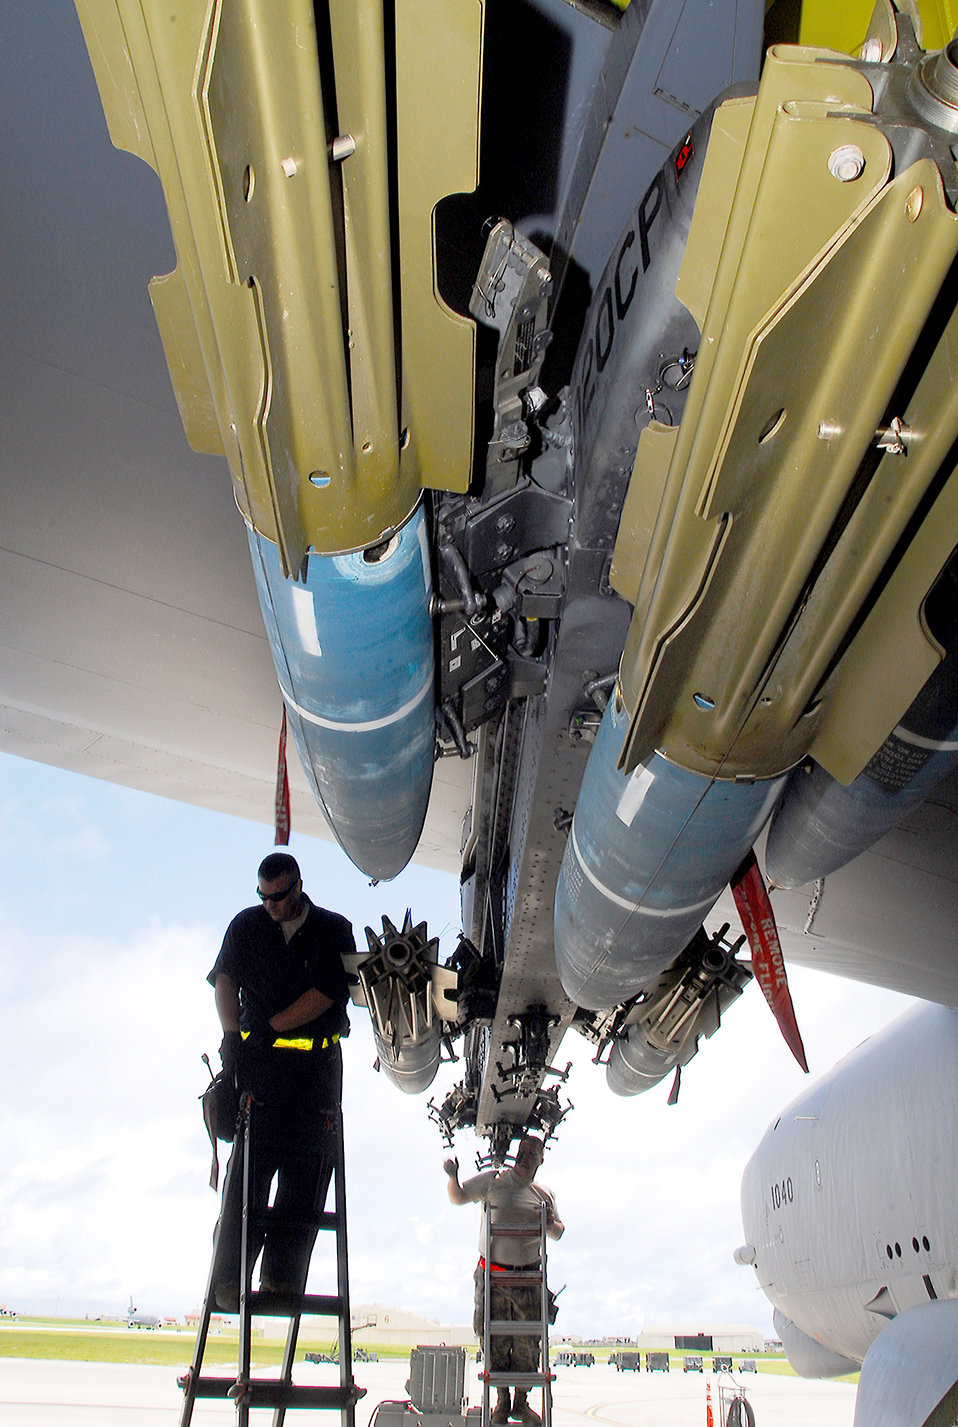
Valiant Shield joint exercise

Staff Sgts. Dustin Hyden and Doyle Atkinson upload Mk 62 Quickstrike naval mines onto a B-52 Stratofortress Sept. 14, 2010, at Andersen Air Force Base, Guam. The mines were uploaded as part of a mine laying exercise between the Air Force and Navy during Exercise Valiant Shield. Sergeants Hyden and Atkinson are assigned to the 36th Expeditionary Maintenance Squadron.